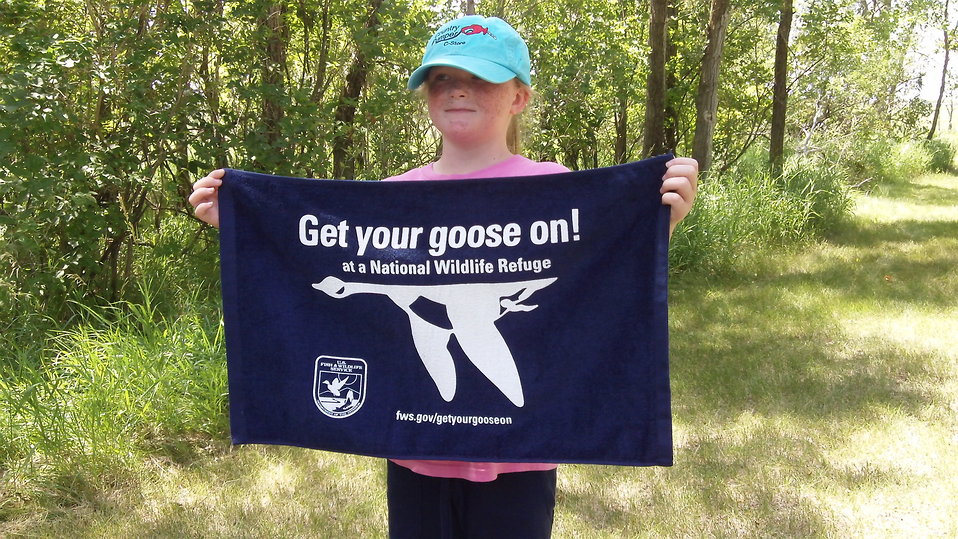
Get Your Goose On!

Photo taken at Huron Wetland Management District in east-central South Dakota.